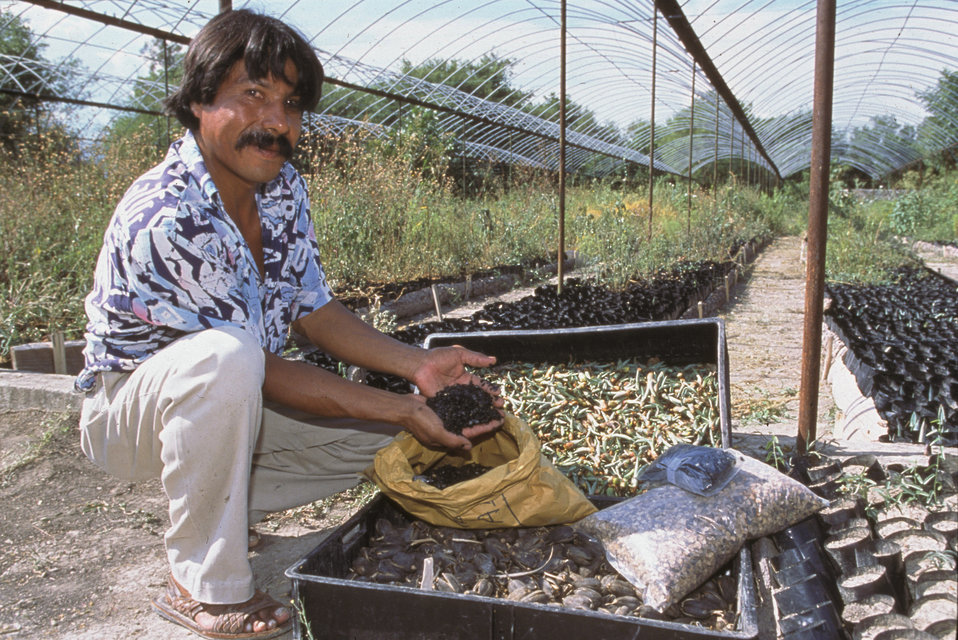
Cultivated agaves

Agaves planted for erosion control are also an agricultural crop.